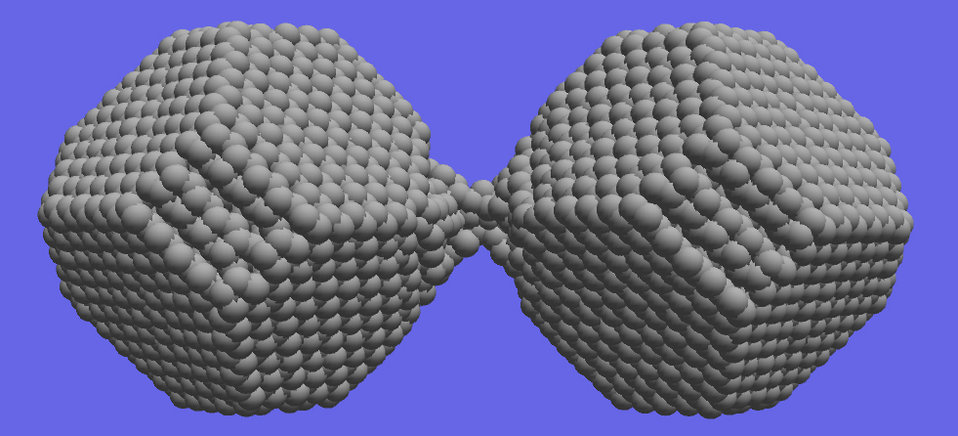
Nanoscale Ductility

NIST researchers have shown that substances such as silica that are brittle in bulk exhibit ductile behavior at the nanoscale. Computer simulations demonstrate the material extension and necking that occurs during the separation of crystalline silica nanoparticles.